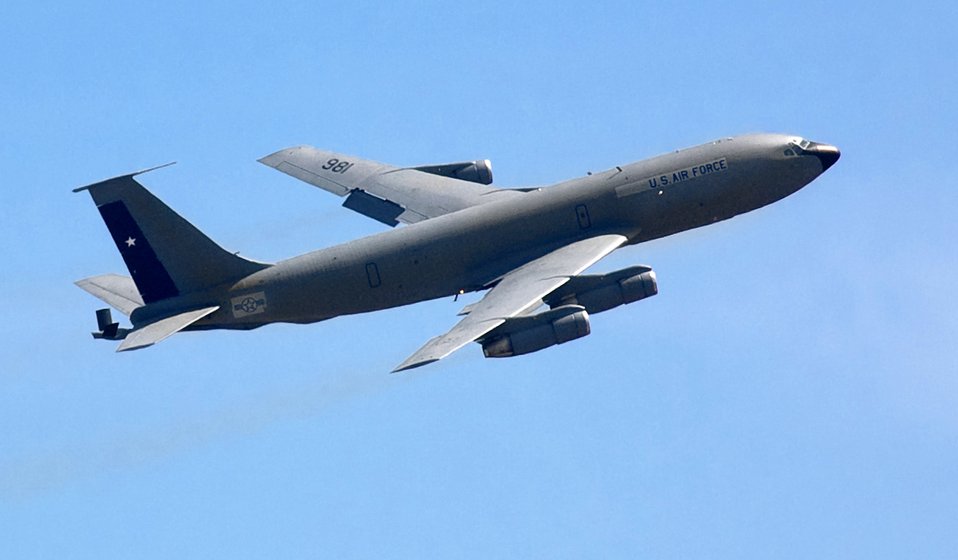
Chilean air force's latest tanker

Above Port San Antonio, a KC-135E Stratotanker completes a test flight over San Antonio Feb. 13, 2010. It is the first of three tankers to be delivered to the government of Chile through the U.S. foreign military sales program. These tankers will augment their current fleet of Boeing 707-based tankers. The San Antonio Boeing Support Systems site specializes in several maintenance and modification processes for U.S. and international military customers. The two other tankers are at Boeing's San Antonio site for programmed depot maintenance before being delivered later this year. The aircraft is seen with transitional marking showing the permanent Chilean air force tail markings, and temporary decals of the U.S. Air Force on other areas for the delivery flight to Chile, when the aircraft arrived in Chile on Feb 16 the decals were peeled off revealing all the Chilean air force marking. FMS is managed and operated by DoD on a no-profit and no-loss basis. Countries and international organizations participating in the program pay for defense articles and services at prices that recoup the actual costs incurred by the United States. Air Force Security Assistance Center oversees system sales and support for more than 170 models of aircraft - a fleet totaling more than 6,600.